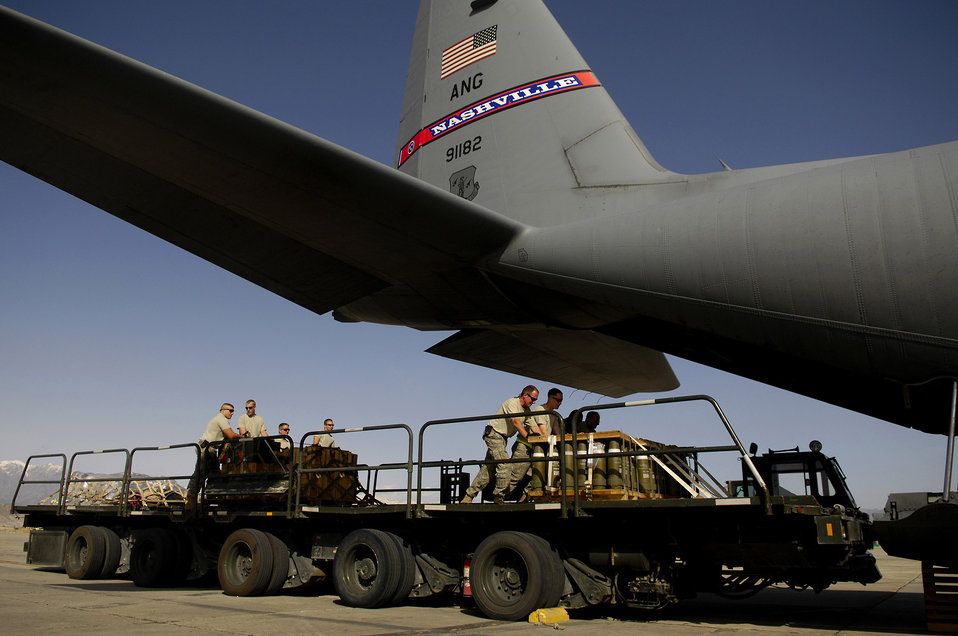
Delivering the goods

Airmen load cargo onto a C-130 Hercules for an Operation Enduring Freedom mission April 16 from Bagram Air Base, Afghanistan. Airmen are assigned to the 455th Expeditionary Logistics Readiness.